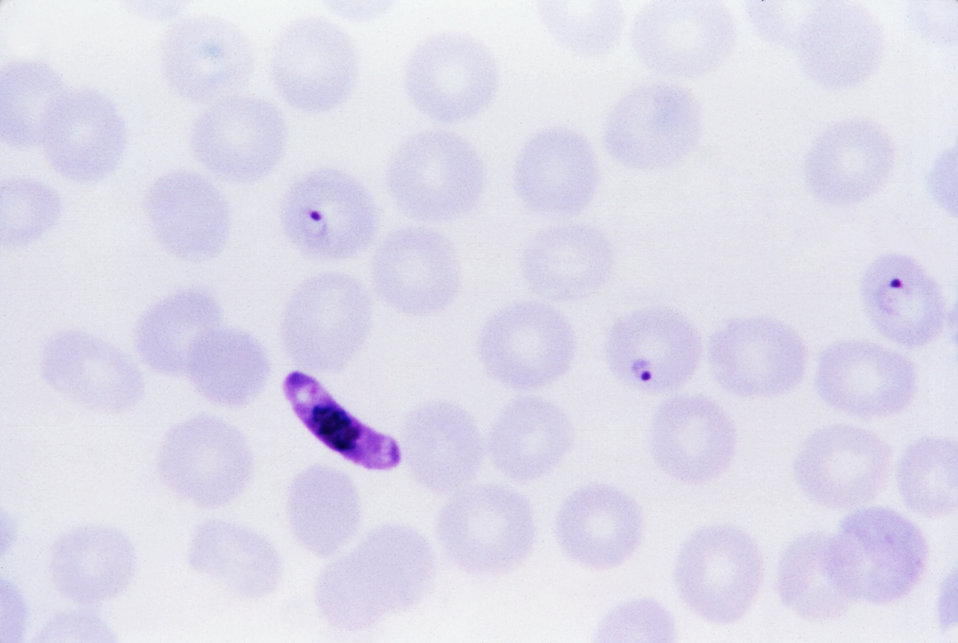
This thin film Giemsa stained micrograph shows a Plasmodium sp. macrogametocyte.